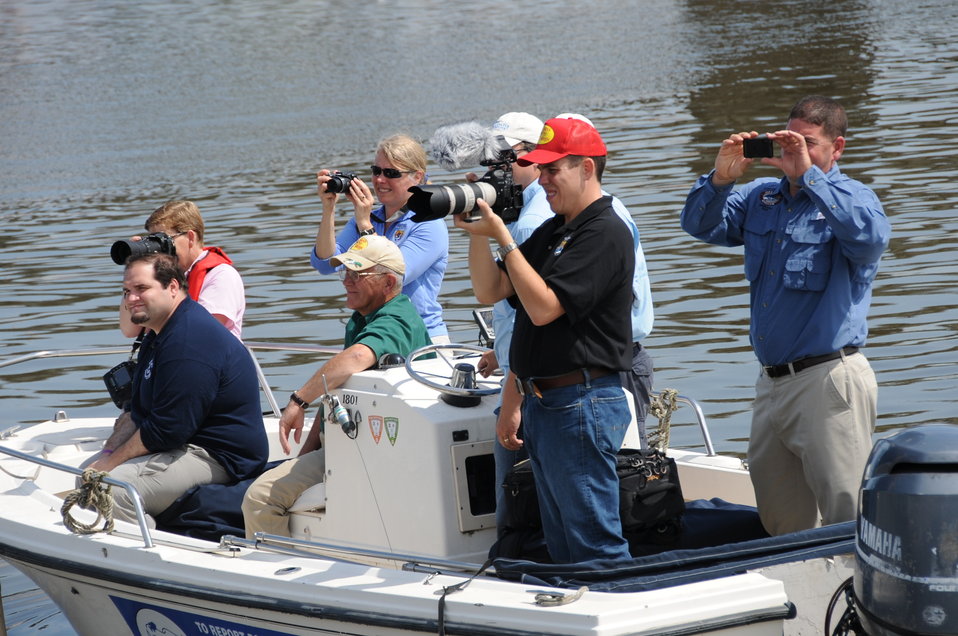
2013 National Fishing and Boating Week

Media Boat